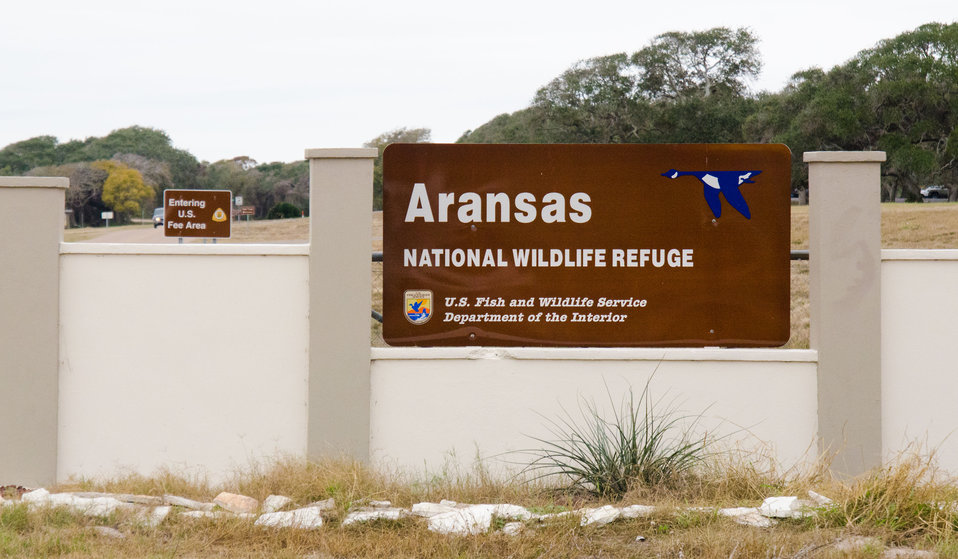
Entrance to Aransas National Wildlife Refuge, in Austwell, TX, on Friday, Dec. 16, 2011. Federal and state partners, including representatives from U.S. Fish and Wildlife Service and local soil and water conservation districts (SWCDs) held a press conference at the refuge. U.S. Department of Agriculture (USDA) Natural Resources Conservation Service (NRCS) State Conservationist Salvador Salinas was the keynote speaker; Copano Bay Soil and Water Conservation District Board Member Dallas Ford opened the event; and U.S. Department of the Interior, Fish and Wildlife Service Aransas National Wildlife Refuge Manager Dan Alonso gave background information about the 115,000-acre refuge that was established in 1939. The refuge fresh water comes from the San Antonio River which flows by the historic Alamo southeasterly toward the Guadalupe River at the estuary of San Antonio Bay, the primary body of water for the refuge. Nationally, USDA-NRCS is dedicating up to $50 million over three years to this effort and will continue to provide the proven technical expertise and that of their partners. The anticipated result is improved water quality, stream flows and wildlife habitat.